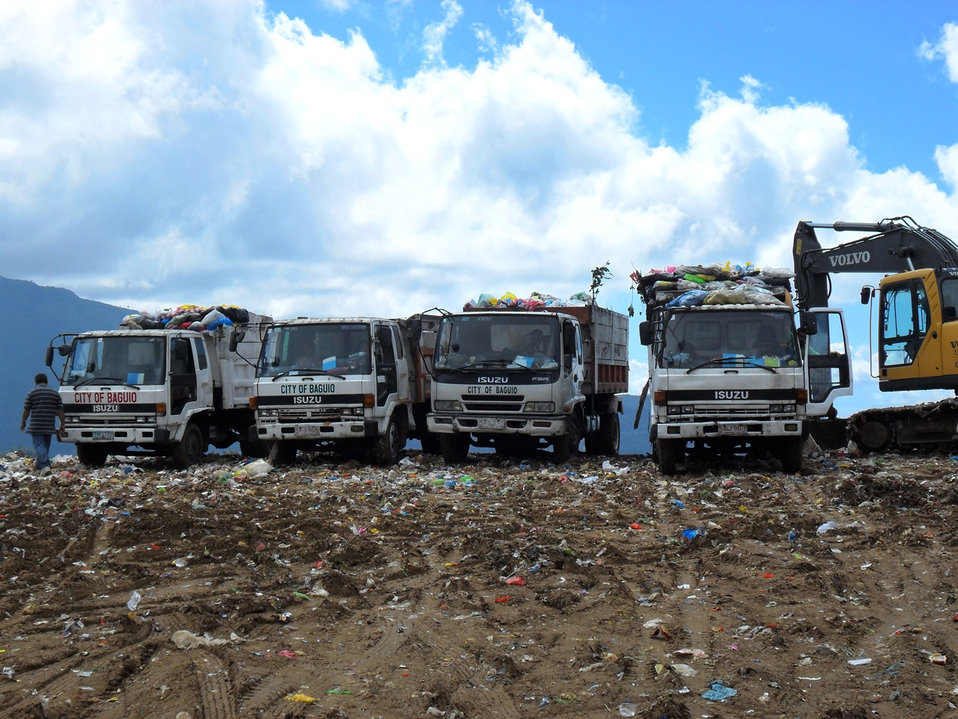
Garbage trucks

Rows of garbage trucks at dumpsite.